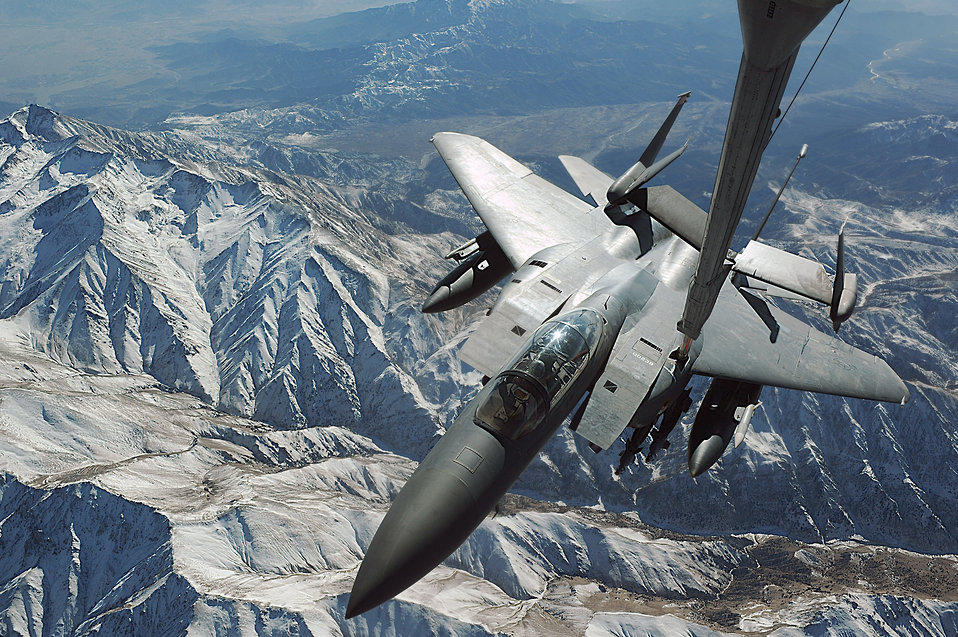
Fuel for fighters

A KC-10 Extender from the 908th Expeditionary Aerial Refueling Squadron refuels a F-15E Strike Eagle from the 391st Expeditionary Fighter Squadron Dec. 11 over Afghanistan. The KC-10 holds six tanks that carry more than 356,000 pounds of fuel.